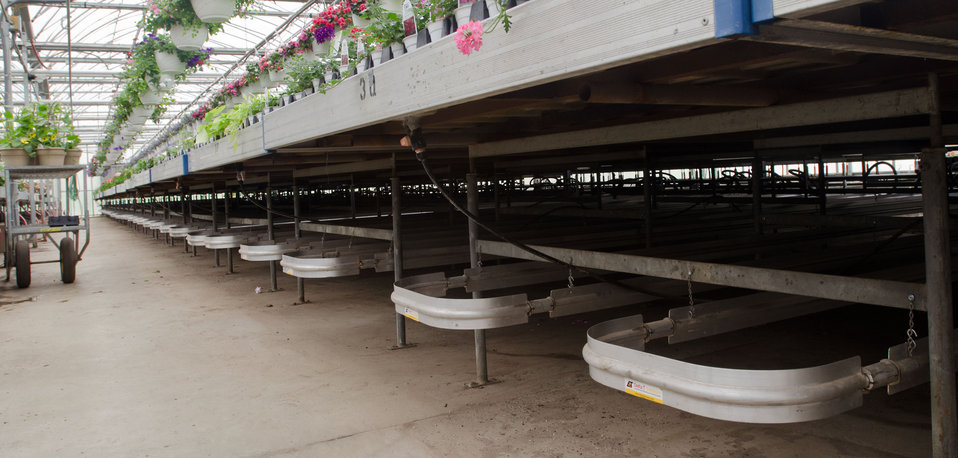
Water filled fin-tube heating element under plant tables at Good Harvest Farm on April 19, 2011 in Strasburg, PA, was completed using a Rural Energy for America Program (REAP) grant for the renovation six months ago that replaced an 80-year old structure with a new 4,000 sq. ft. structure that features energy efficient glass roof with curtains that block or trap heat, radiant heaters in or above the floor, and the replacement of an oil-fired hot-air furnaces with propane fueled boilers that supply fin-tube and cement embedded tube elements with hot water. With current fuel prices, there is a projected 2011 energy cost savings of more than $20,000; a 40% reduction in energy costs – exceeding projected savings. Plant health and quality has improved and been more consistent because the temperature and humidity is computer controlled and distributed evenly throughout the facility. Utilizing sensors and a roof mounted weather station the system can maintain four different climate zones 24-hours a day. Two 1,000,000 BTU propane fueled boilers heat the water to 190 degrees for the 8,000 feet of fin-tube heating elements were used where the original foundation, and the 8,000 feet of tubing that was embedded in a new cement foundation. After traveling through the energy efficient system, water only looses 20 degrees. When temperatures become to hot, motorized roof vents open to allow rising heat to escape; a 98% energy savings from massive fans that previously forced air out. Both systems create a microclimate in and round the plant trays in the growing and sales room. Representing Good Harvest Farm Chris Powell says, “You don’t need to have a lot of land to have a lot of green houses. There are places in cities where vegetables are grow on store roof tops and selling them below in the same structure.”